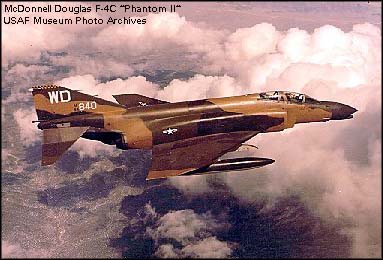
F-4C Phantom II

1960'S -- First flown in May 1958, the Phantom II originally was developed for U.S. Navy fleet defense and entered service in 1961. The U.S. Air Force evaluated it for close air support, interdiction and counter-air operations and, in 1962, approved an Air Force version. When unveiled, the fighter was considered huge and immensely powerful. Designated F-4C, it made its first flight on May 27, 1963.